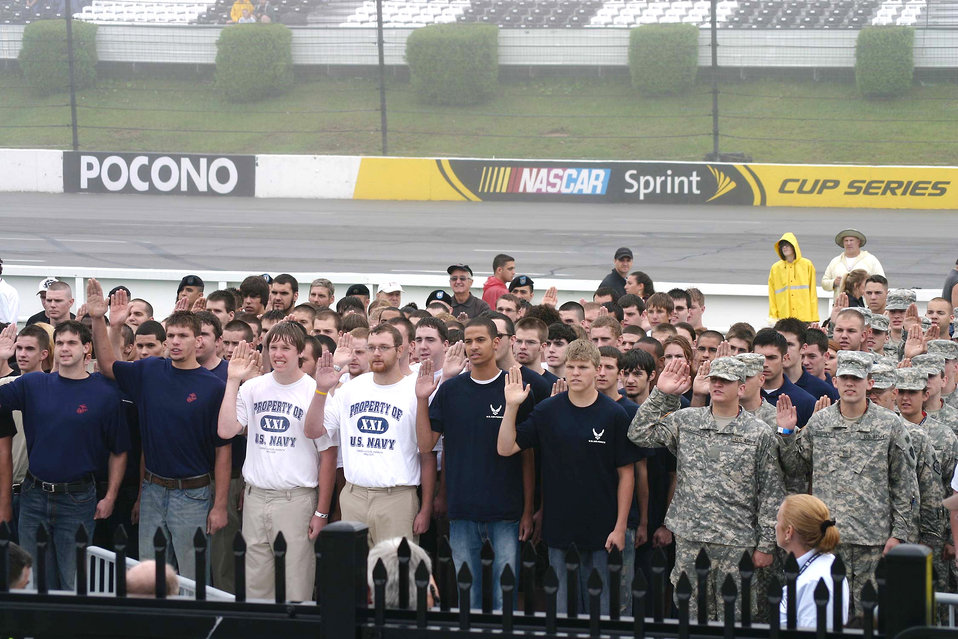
Pennsylvania 500 NASCAR weekend

Approximately 100 young men and women destined for the Air Force, Army, Navy or Marines take the oath of enlistment into their respective military service's delayed-entry program at the Pocono Raceway Aug. 2. Air Force Chief of Staff Gen. Norton Schwartz conducted the joint-service ceremony.